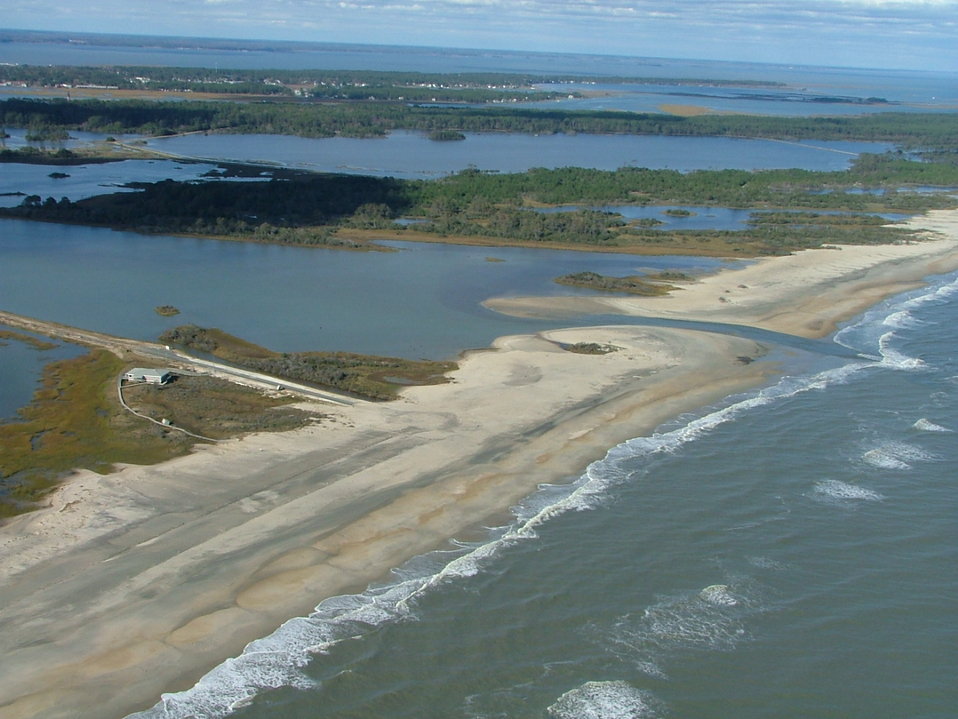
Chincoteague National Wildlife Refuge (VA)

The storm created an inlet between Swan Cove and the ocean.